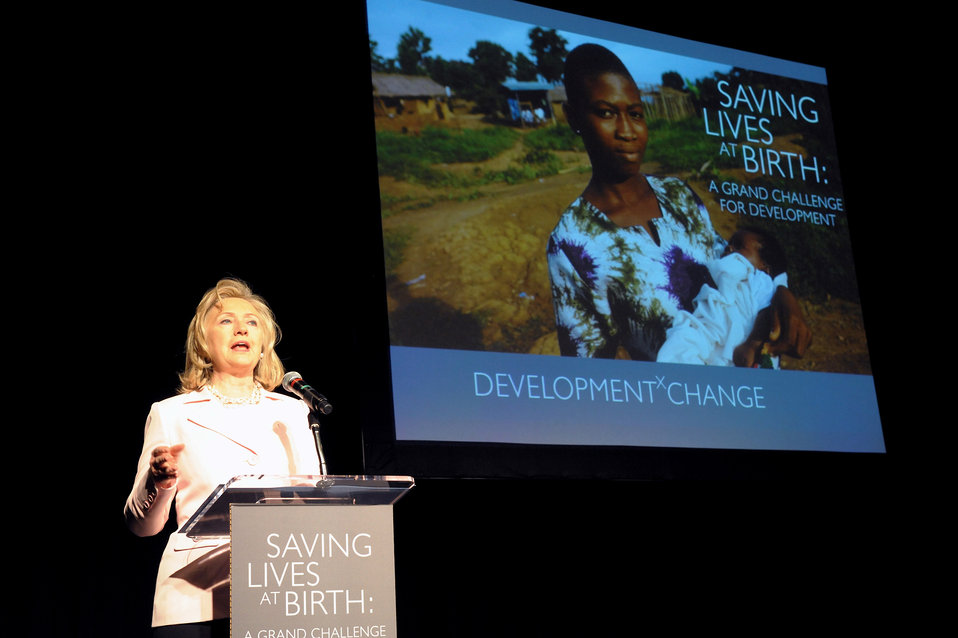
Secretary Clinton Delivers Remarks at USAID's aving Lives at Birth Development Exchange Awards Ceremony

U.S. Secretary of State Hillary Rodham Clinton delivers remarks at USAID's Saving Lives at Birth Development Exchange Awards Ceremony '77 Inventions That Could Save Moms and Babies,' in Washington, D.C., on July 28, 2011.